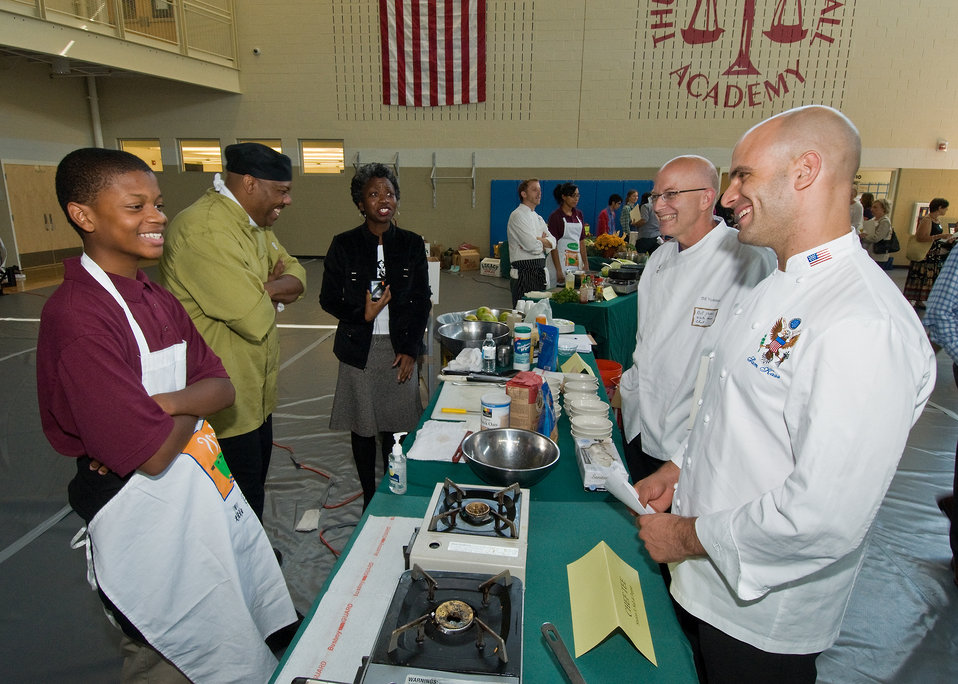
From left: Malachi McCaskill a sophomore at Thurgood Marshall Academy and Chef Terrell Danly, 'Station 9' and 'Salt and Pepper Chef’s. com', explain the recipe they will be preparing, 'Apple Cranberry Crisp' to Chef Sam Kass, White House Assistant Chef and Senior Policy Advisor for Healthy Food Initiatives and Chef Bill Yosses, White House Chief Pastry Chef before the Chef Competition of D.C. Farm to School and D.C. School Garden Week at the Savoy Elementary and Thurgood Marshall Academy shared campus in Washington, DC, Tuesday, October 12, 2010. At the event related to the Iron Chef competition local chef’s and student sous chef’s created healthy, delicious recipes using local apple varieties to be judged by the students themselves. School children and a partnership of community organizations have responded to First Lady Michelle Obama’s goal to end childhood obesity by building school gardens, providing healthier foods in school meals, and helping kids connect with local food and agriculture. USDA Photo 10di1522-10 by Bob Nichols.